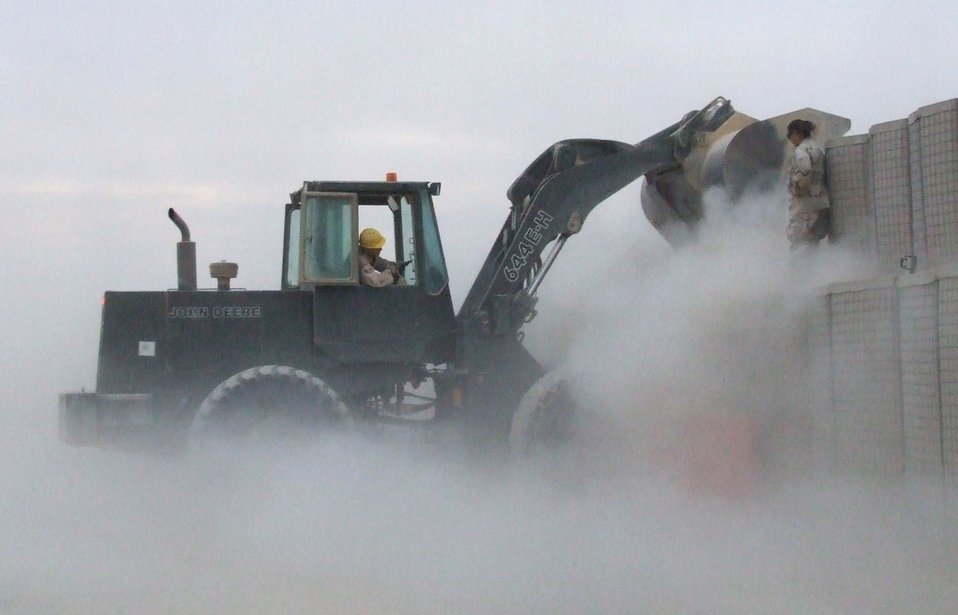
Prime BEEF on the menu at contingency base

Senior Airman Riza Razz (right) spots for Staff Sgt. Jason Kerkaert as he fills Hesco barriers at Contingency Operating Base Speicher, Iraq. Sergeant Kerkaert and Airman Razz are assigned to Detachment 10 of the 732nd Expeditionary Civil Engineer Squadron and are deployed to Speicher from Ellsworth Air Force Base, S.D.